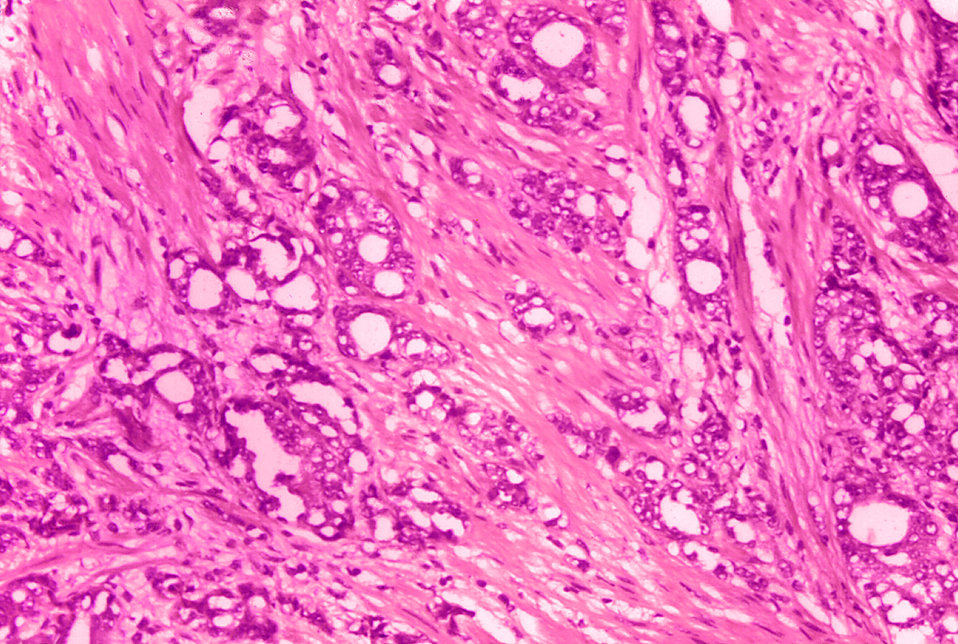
This photomicrograph revealed histopathologic changes indicative of adenocarcinoma, of the prostate.